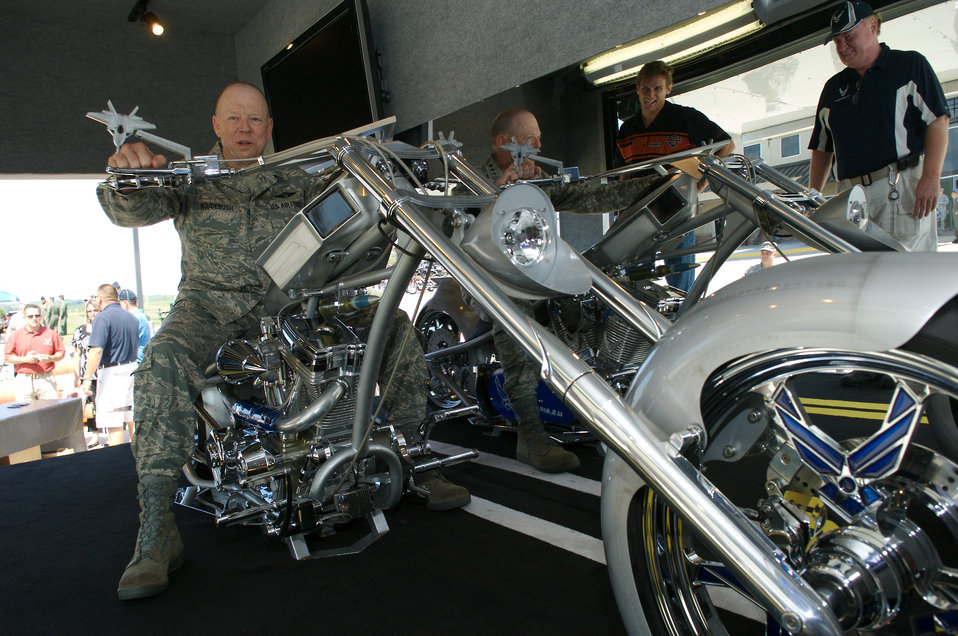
Hog wild

Lt. Gen. (Dr.) James G. Roudebush sits in the Air Force Orange County Chopper as Don Mackey (right) and Blake Dillon talk at Dillon Brothers Harley-Davidson for Air Force Week in the Heartland Aug. 14 in Omaha, Neb. General Roudebush is the surgeon general of the Air Force. Mr. Mackey manages the display and is one of two people who represent the Air Force on the title of the motorcycle. Built in 2005, the chopper has a 131 cubic inch engine that generates 150 horsepower. From end to end it stretches 10 feet 3 inches. It features a six-speed Baker right-hand drive that puts power to the 300 series Avon Venom rear tire. The color scheme is based on the F-22 Raptor. Mr. Dillon, co-owns the motorcycle dealership. .